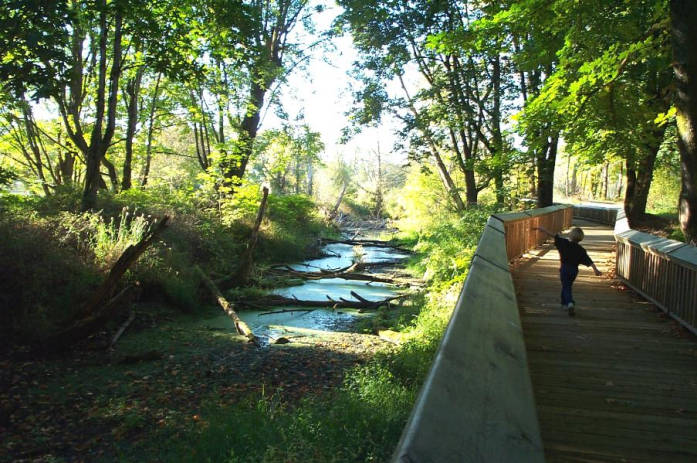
Boy on Boardwalk